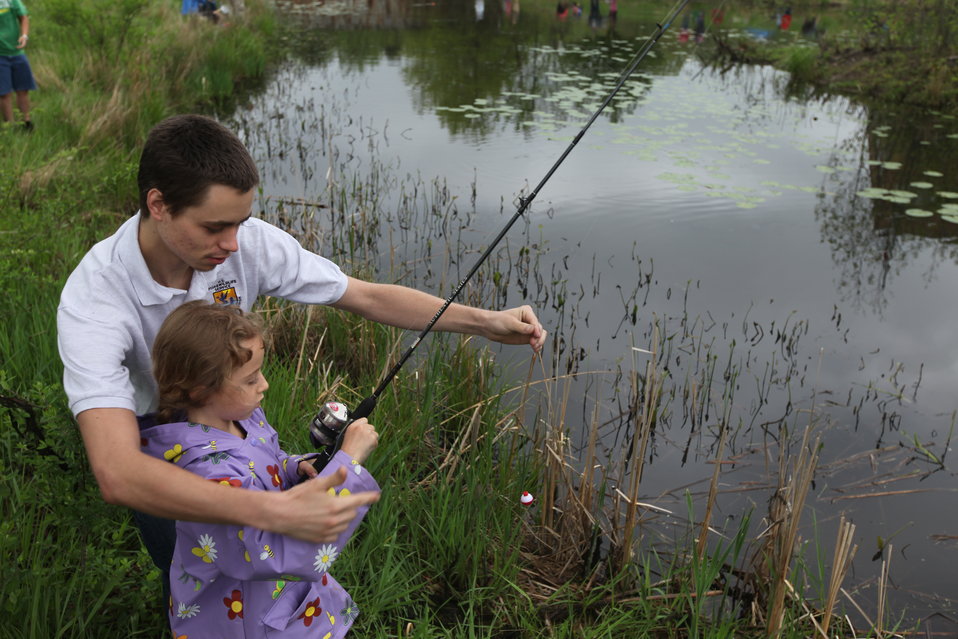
Fishing Derby